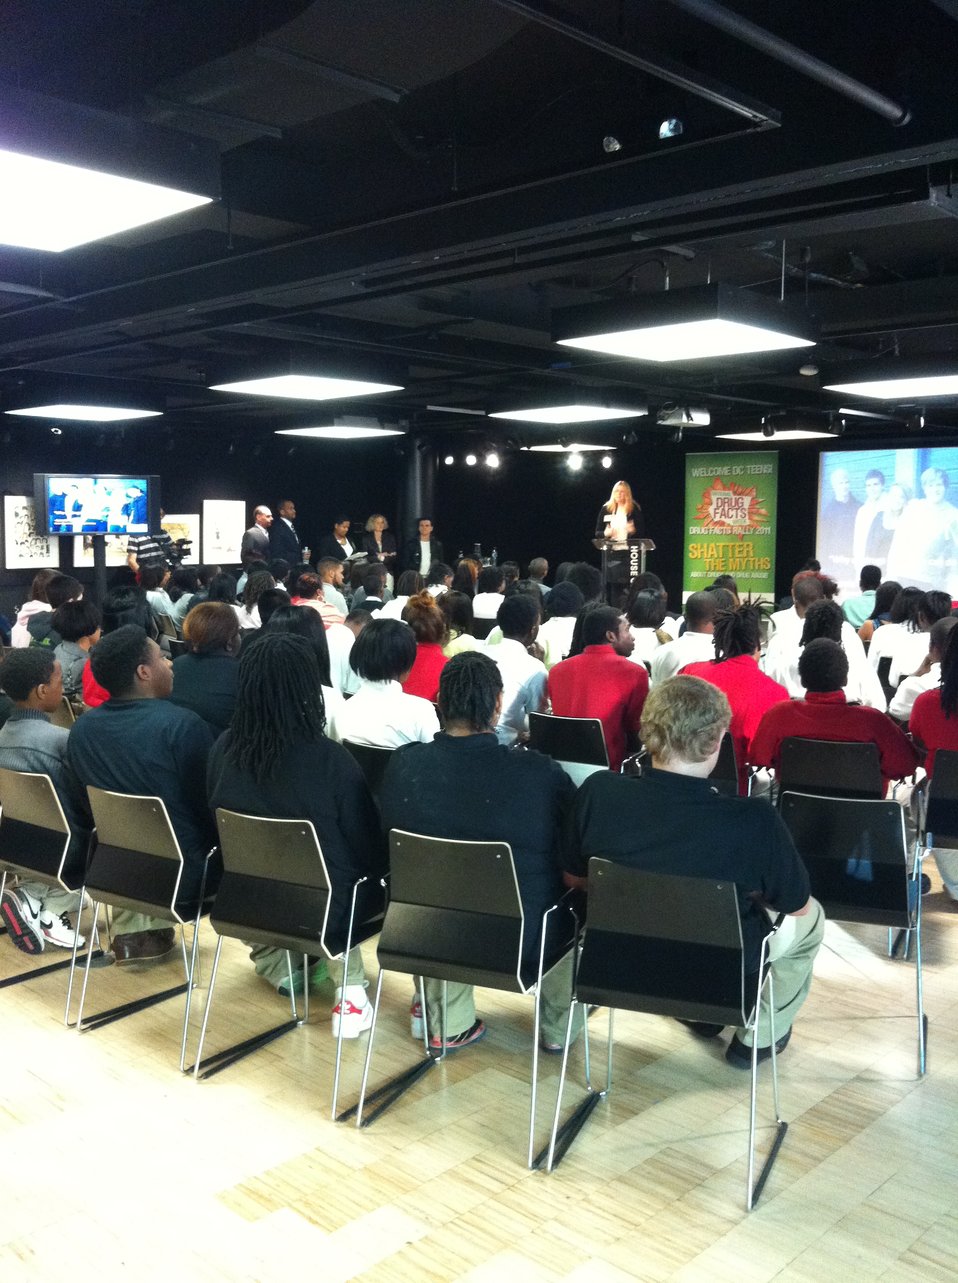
Mentor 2